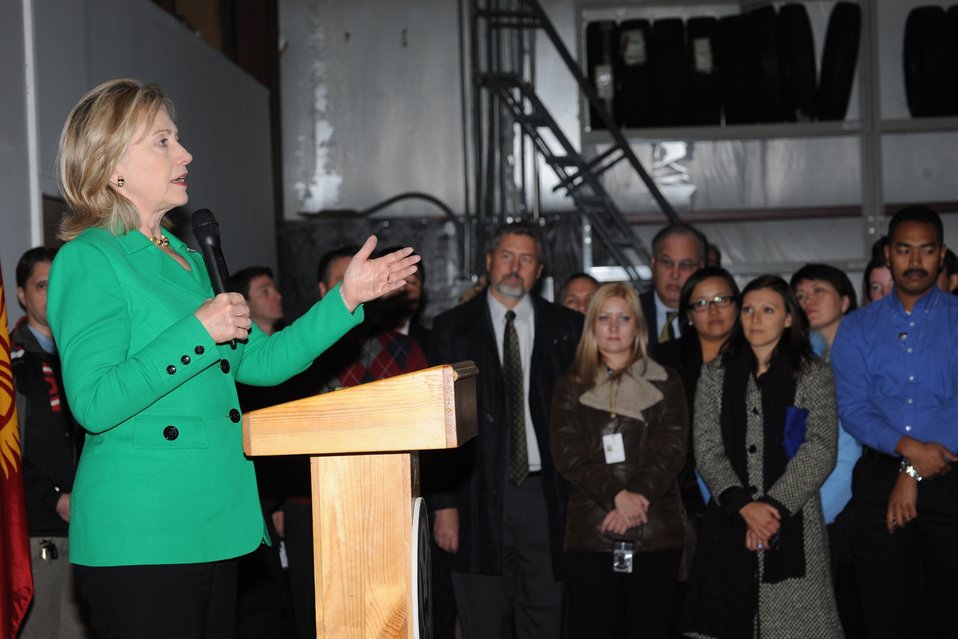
Secretary Clinton Speaks With Embassy Bishkek Staff

U.S. Secretary of State Hillary Rodham Clinton speaks with U.S. Embassy Bishkek staff in Bishkek, Kyrgyzstan on December 2, 2010.